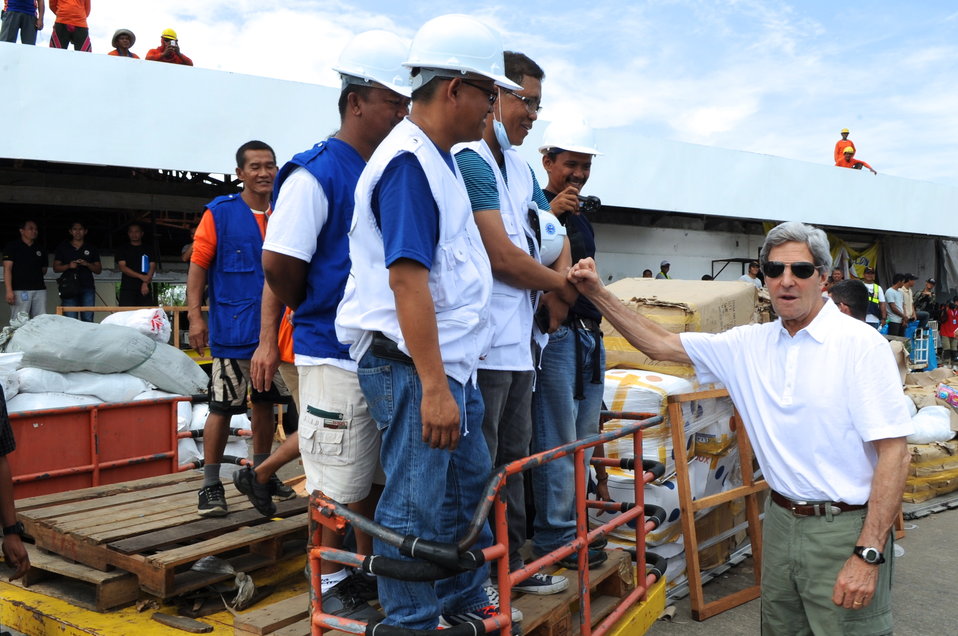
Secretary Kerry Thanks Recovery Workers Rebuilding the Tacloban City Airport

U.S. Secretary of State John Kerry thanks recovery workers helping to rebuild Tacloban City Airport as he arrives in the community on December 18, 2013, to inspect damage caused by Typhoon Haiyan and announce $25 million in fresh U.S. recovery aid.